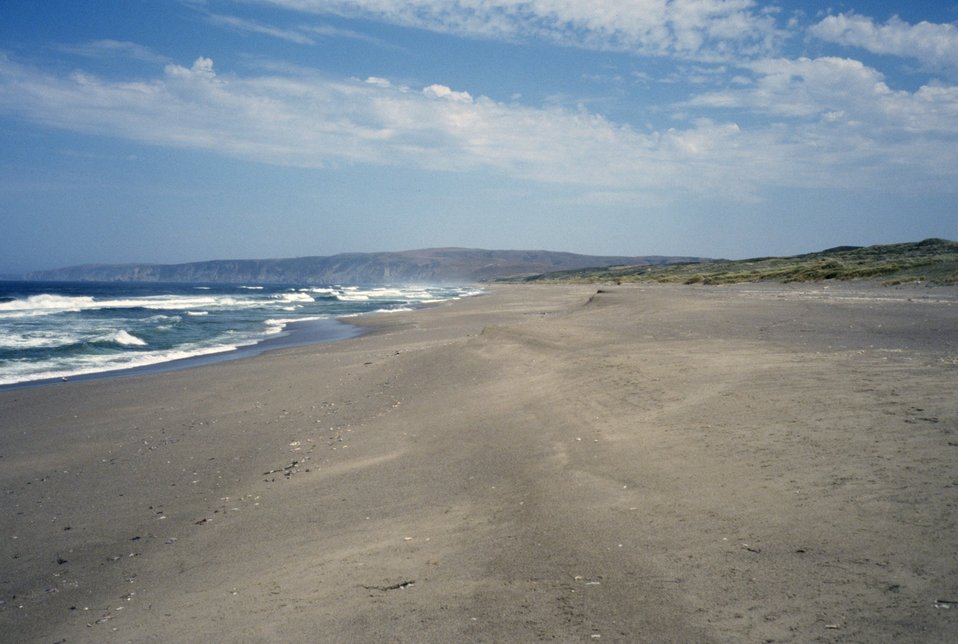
Point Reyes Great Beach